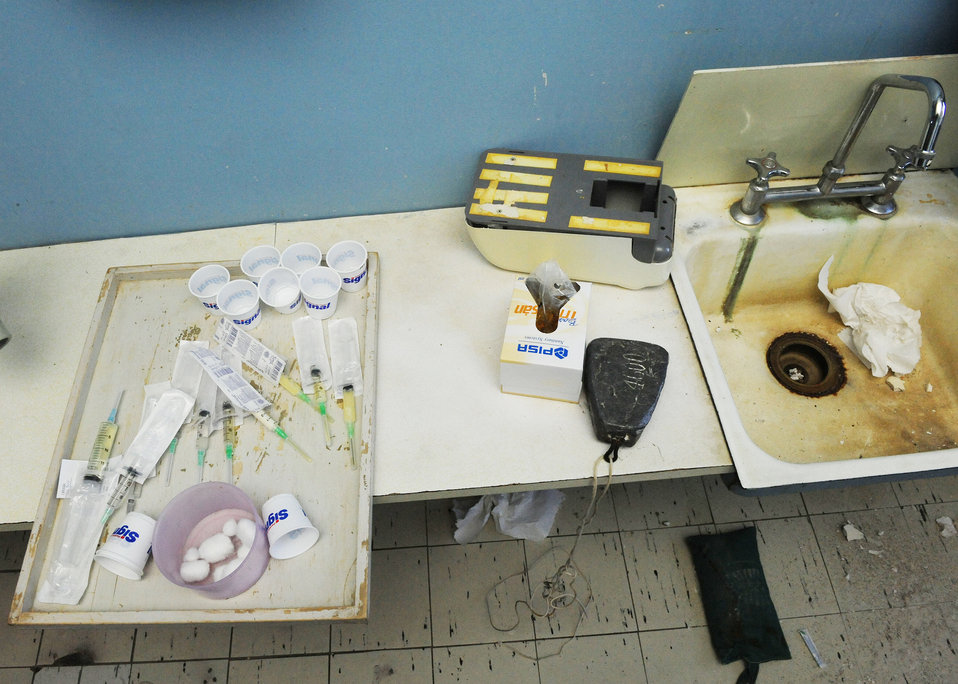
Airmen, Chileans treat patients at new expeditionary hospital

Syringes and medication are untouched March 12, 2010, in a regional hospital in Angol, Chile. The hospital was rendered structurally unsound by an 8.8 earthquake that occurred Feb. 27, 2010. With the nearest operation ward more than 40 miles away, and many other local hospitals overwhelmed with casualties following the earthquake, local Chilean officials requested assistance from U.S. forces to help with primary care capabilities.